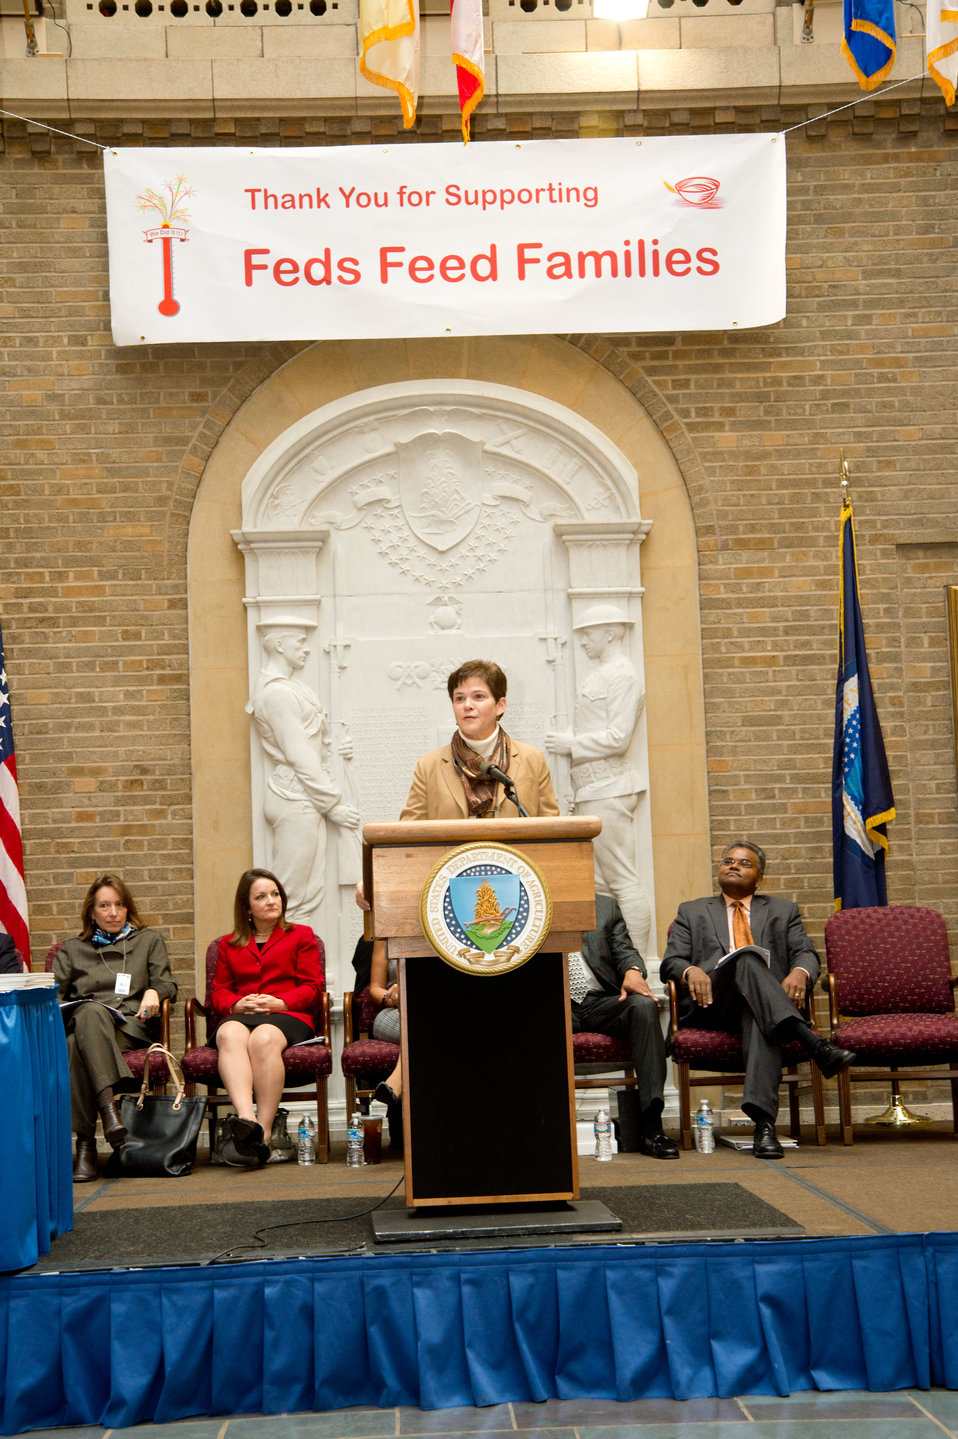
Krysta Harden, Agriculture Deputy Secretary addresses employees and partner agencies at the United States Department of Agriculture (USDA), Feds Feed Families closing ceremony, on Wed., Nov. 13, 2013 in Washington, D.C. Federal employees nationwide stepped up the challenge of Feds Feed Families and gathered 9 million pounds of food for food banks across the nation and the National Capital Region for families in need setting an all time record high.